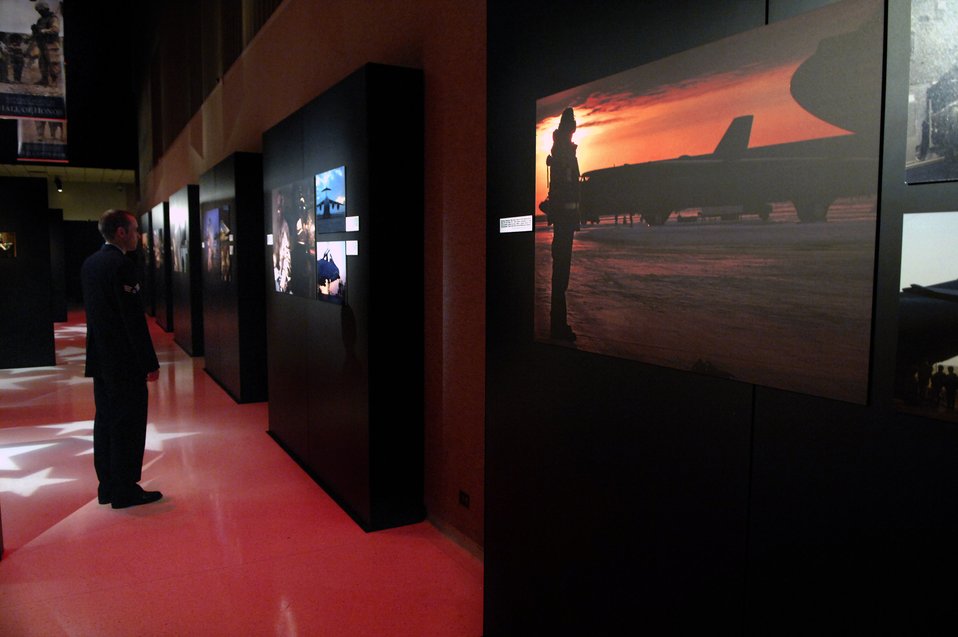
Air Force, military photographers recognized

Senior Airman Chad Kellum takes a moment to check out Air Force photographs displayed in the